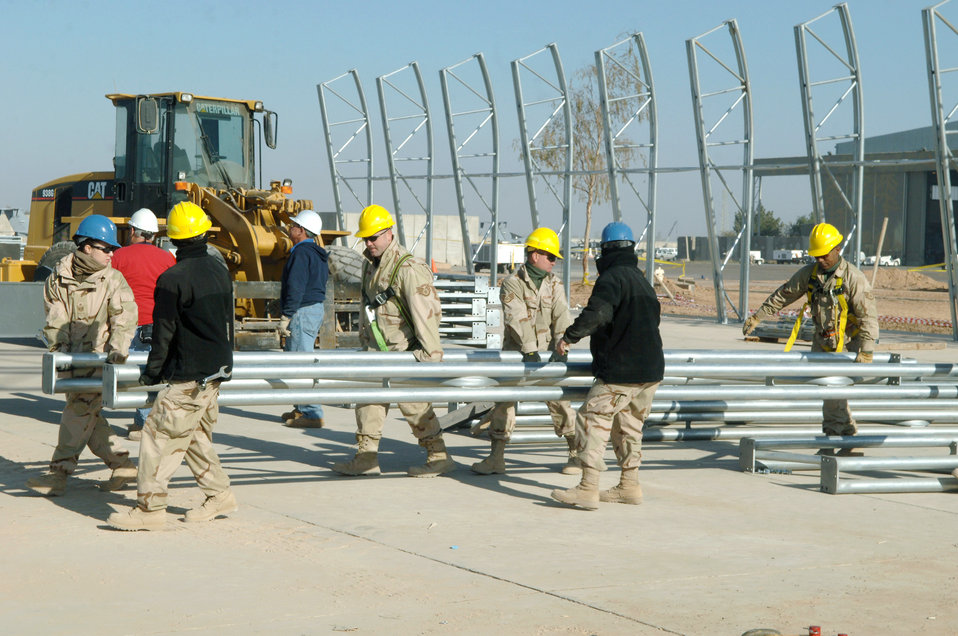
Shelter construction

Airmen from the 332nd Expeditionary Civil Engineer Squadron Structures shop postion an arch Nov. 26 to the new Hunter Unmanned Aerial Vehicle shelter. The 20-day project at Balad Air Base, Iraq., will take approximately 3,200 man hours to complete.